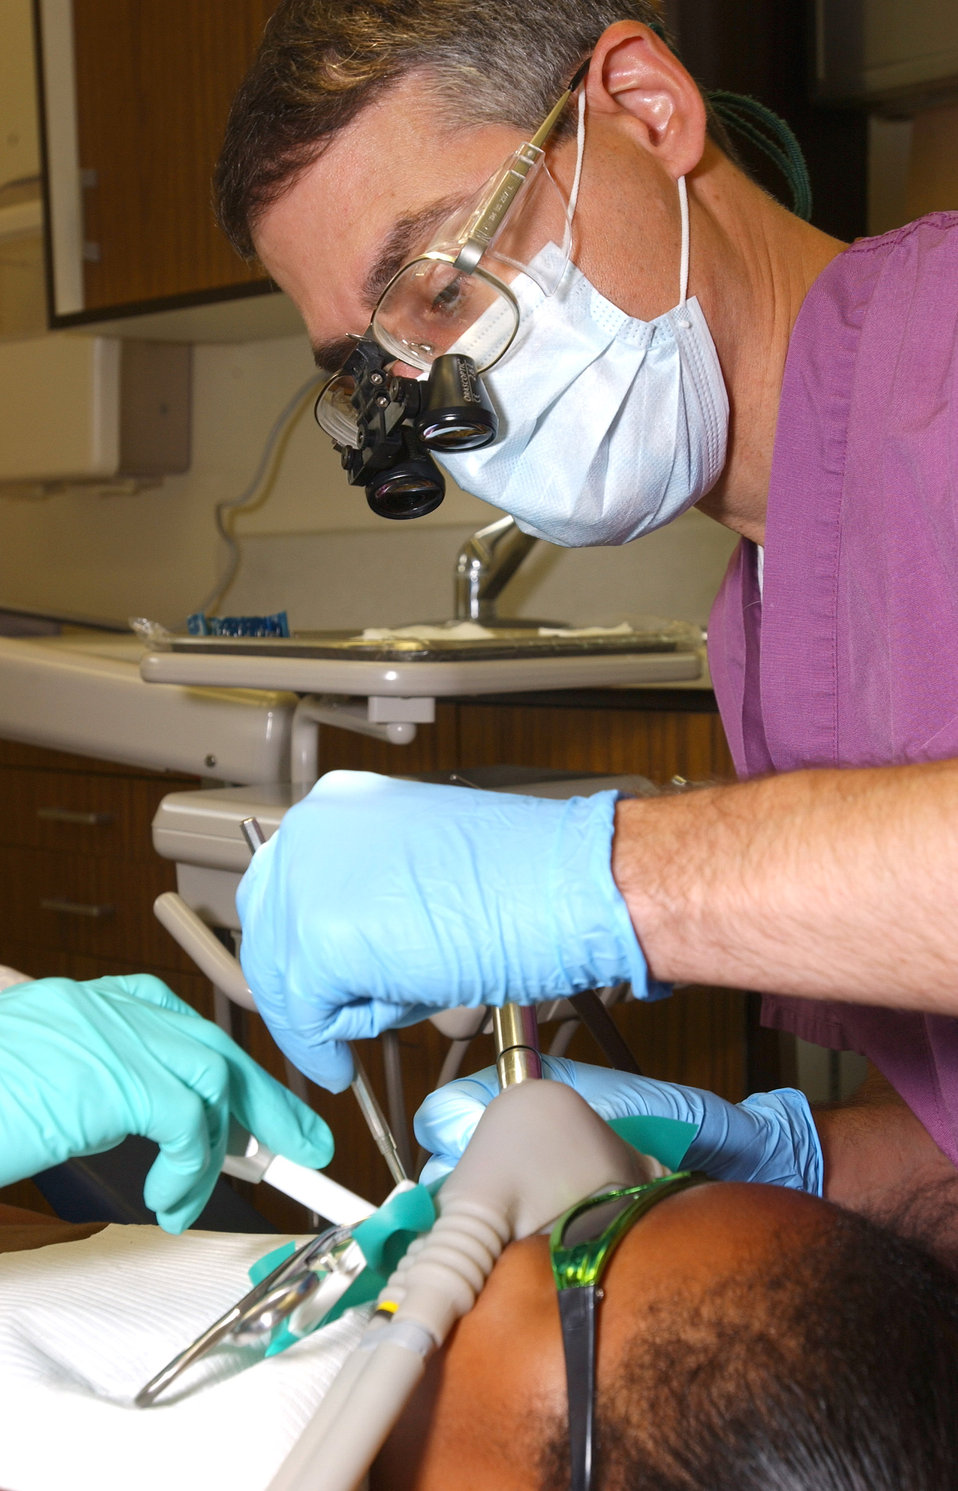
Course prepares dentists to treat children worldwide

Maj. David Kieser replaces a filling in a patient's mouth at the Dunn Dental Clinic Sept. 18 at Lackland Air Force Base, Texas. Major Kieser is a Pediatric Dental Course resident from Scott Air Force Base, Ill.